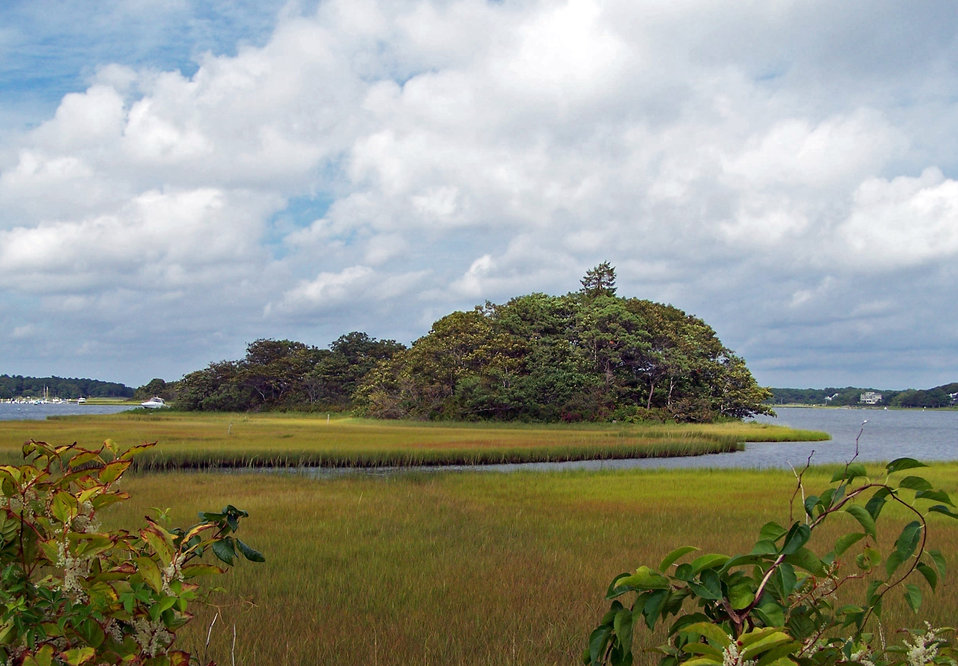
Mashpee National Wildlife Refuge, MA.